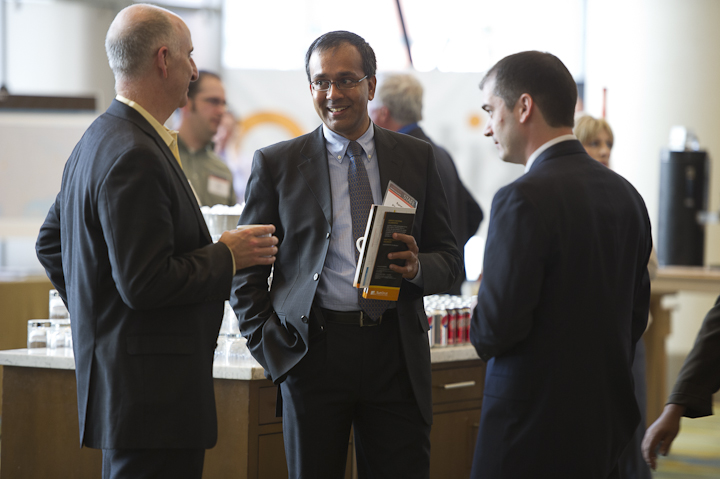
SunShot Summit Attendees

June 13, 2012- Participants talk outside the plenary session at the SunShot Grand Challenge Summit and Technology Forum in Denver, Colorado.